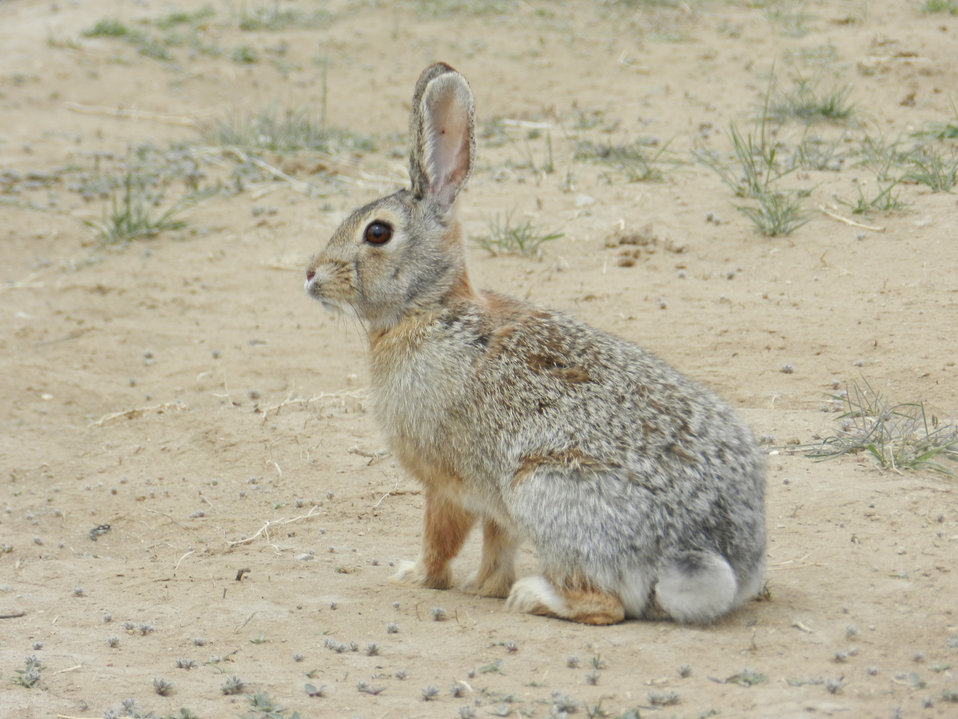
Desert Cottontail, Wyoming.

Credit: Pedro 'Pete' Ramirez, Jr. / USFWS